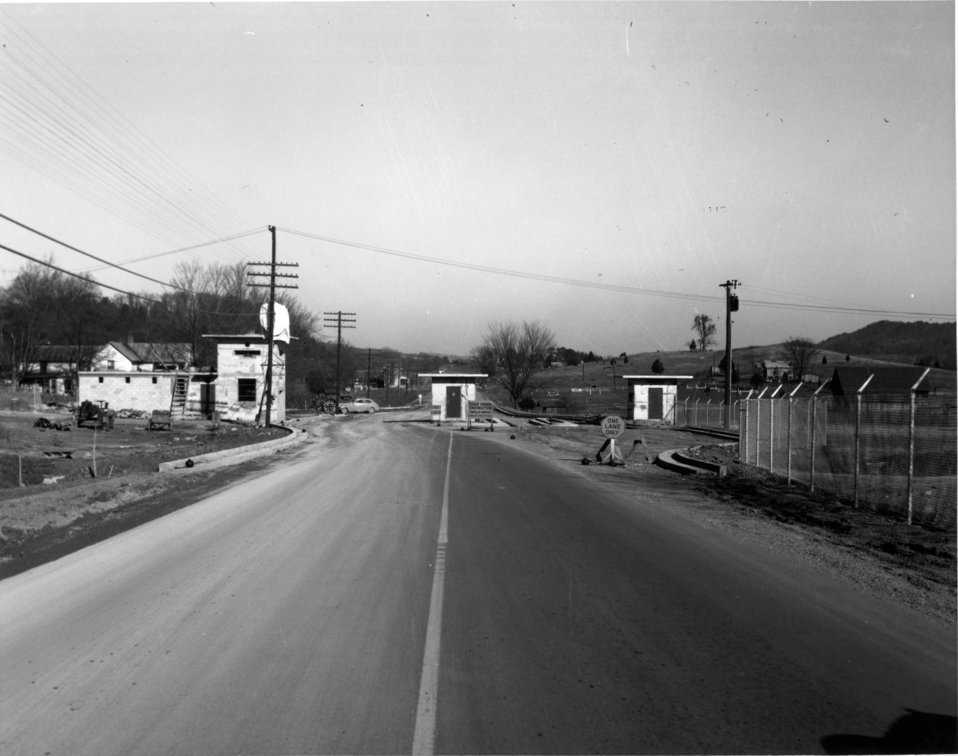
Security at Oak Ridge